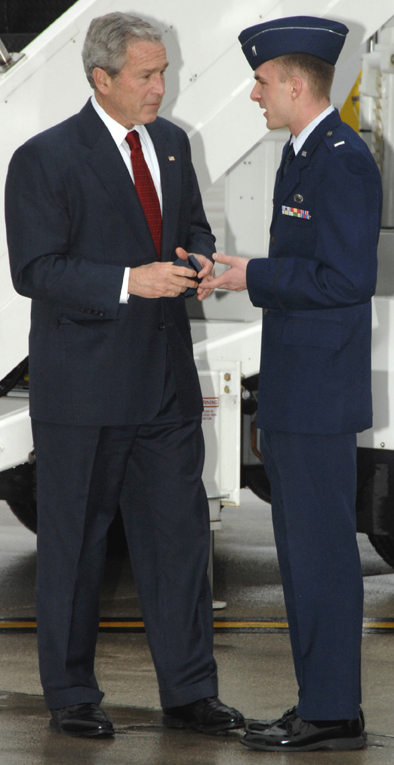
President Bush thanks Airmen, outlines importance of 'staying the course' in Iraq

President George W. Bush presents the President's Volunteer Service award to 1st Lt. Robert Goodreau during the president's visit to Wright-Patterson Air Force Base, Ohio, March 27.